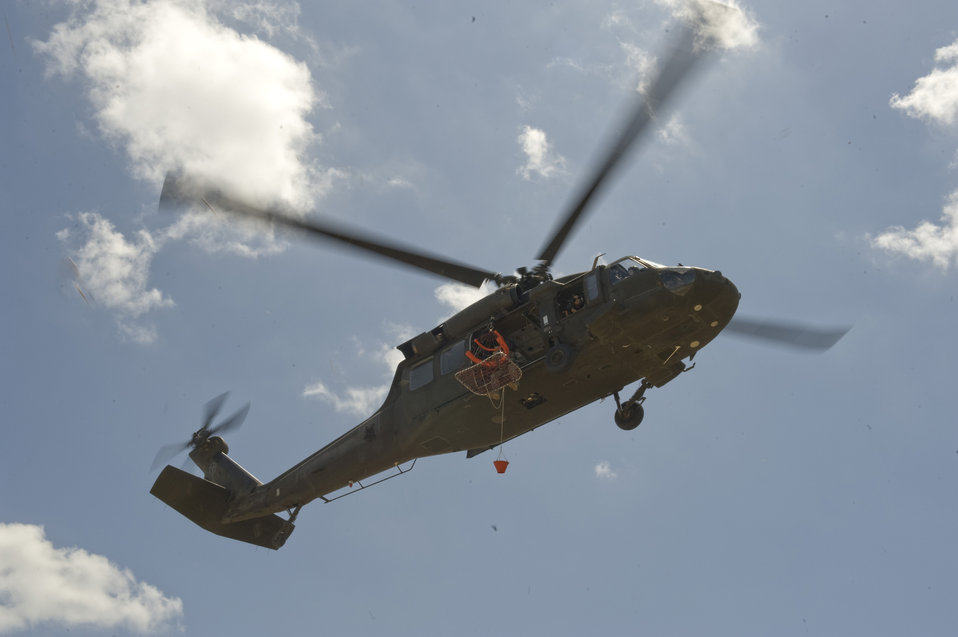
Air Guard flight crews undergo water survival training

A UH-60 Black Hawk from the 149th Aviation Regiment is maneuvered in to position during refresher aircrew water survival training at Canyon Lake near San Antonio. The aircraft and crew provided the water recovery portion of the refresher training conducted by the 149th Fighter Wing. Both units are part of the Texas National Guard assigned in San Antonio.